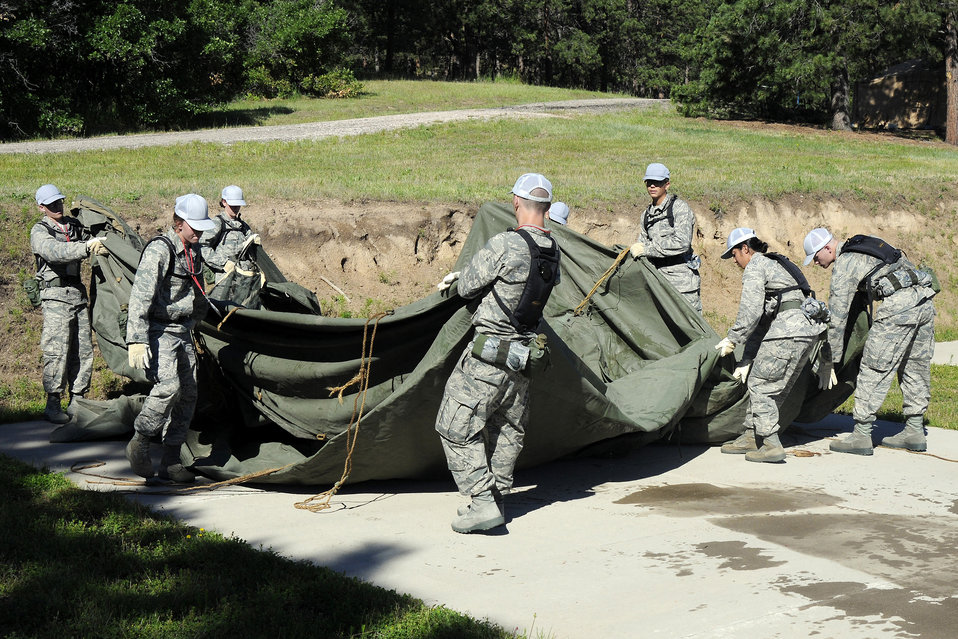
New cadets discover Jacks Valley

Basic cadets begin to set up their tent as they begin the second phase of basic cadet training in Jacks Valley on July 13.